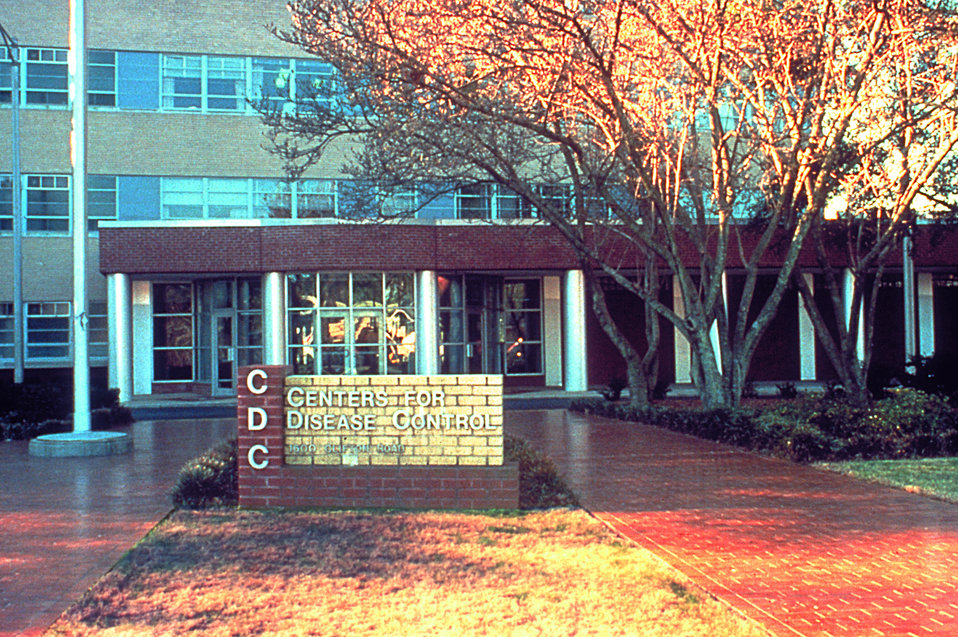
Front of Building 1, CDC, Sometime During the Late 1980's.